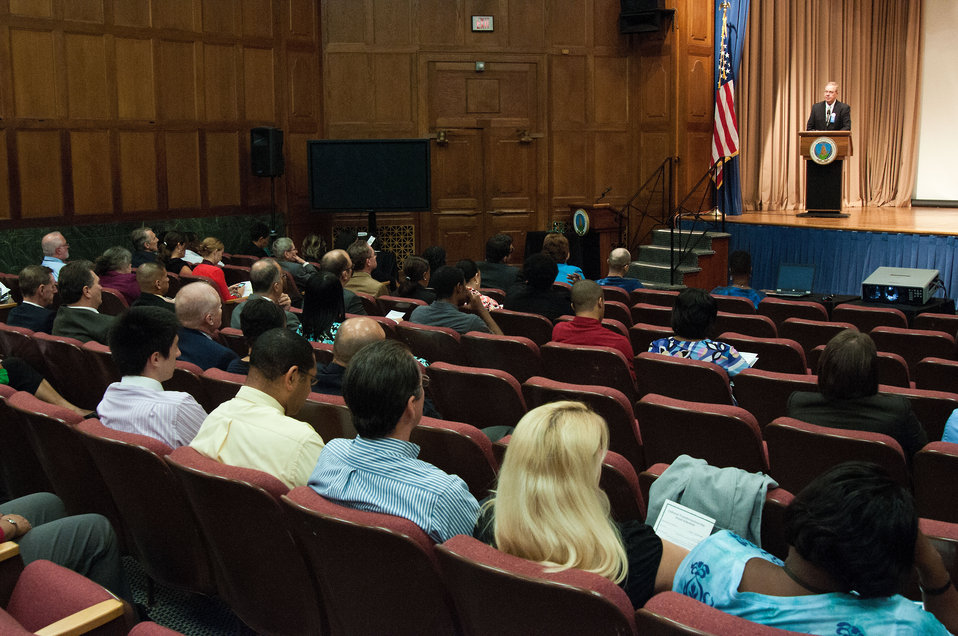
Agriculture Under Secretary for Rural Development Dallas Tonsager addresses employees during the United States Department of Agriculture Rural Development Cultural Transformation Day in Washington, D.C. on Thursday, July 12, 2012.